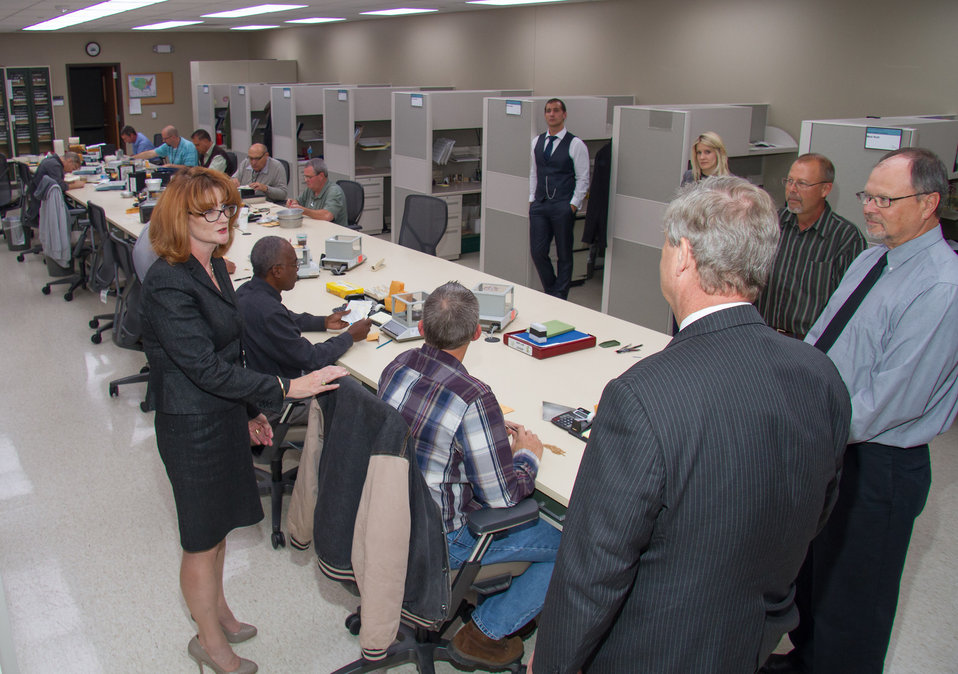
Mary Alonzo, Director of Grain Inspection, Packers and Stockyards Administration (GIPSA) Technology and Science Division, describes the functions of GIPSA's Board of Appeals and Review to Agriculture Secretary Tom Vilsack in Kansas City, MO, on Wednesday, Oct. 23, 2013, as members of the Board of Appeals and Review and the Grading Services Laboratory listen.